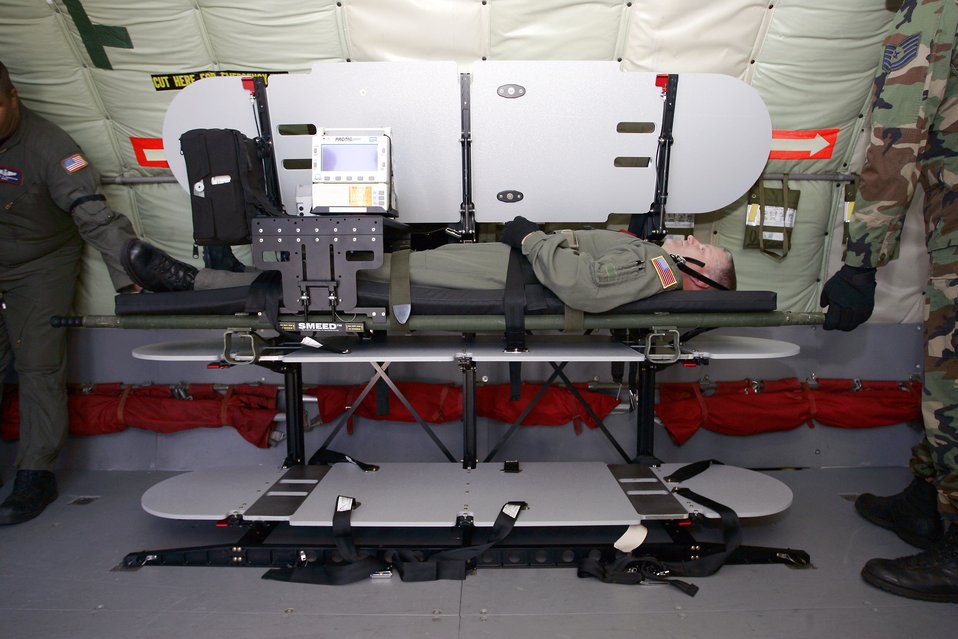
Air Mobility Battlelab's lightweight litter system initiative yields promising results

A KC-135 Stratotanker aircrew member lays on a stacking litter system as part of a demonstration for the system by the Air Mobility Battlelab June 22 at McGuire Air Force Base, N.J. The aircrew member is from the 108th Air Refueling Wing at McGuire AFB. The Air Mobility Battlelab is located in the U.S. Air Force Expeditionary Center on Fort Dix, N.J.